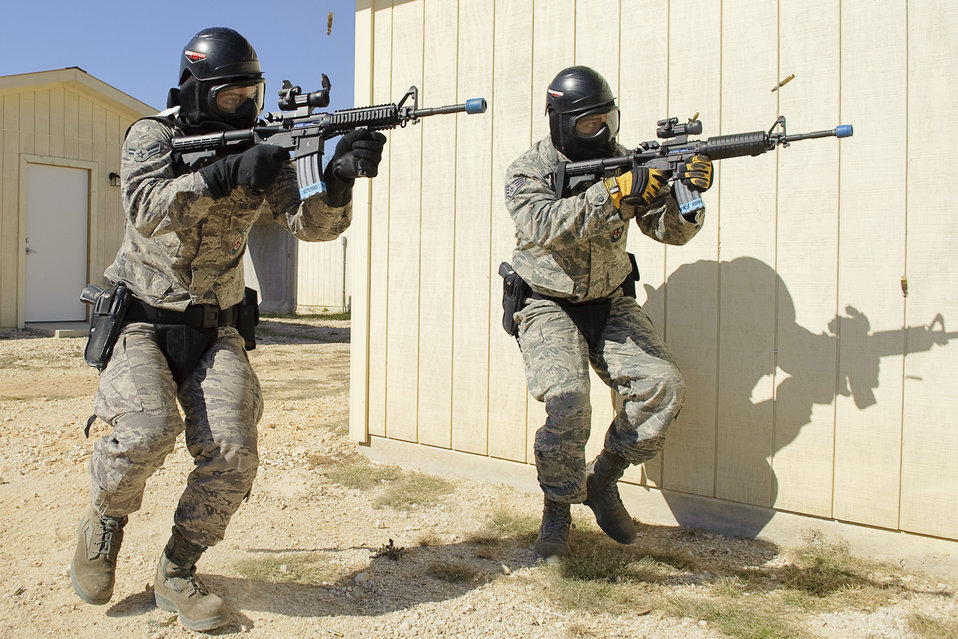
Battle of the badges

Airman 1st Class Karl Goodwin and Staff Sgt. Chris Ruiz advance during an exercise conducted by the 902nd Security Forces Squadron Dec. 4, 2010, at Randolph Air Force Base, Texas. Firefighters and security forces members experienced aspects of each other's jobs. Airman Goodwin and Sergeant Ruiz are firefighters with the 902nd Civil Engineer Division.